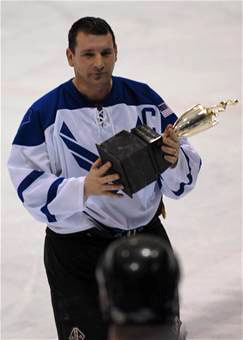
Rumble on the rink

Senior Master Sgt. Dan Morin holds the trophy for the Commander's Cup Hockey Game Jan. 13 at the Big Dipper Ice Arena in Fairbanks, Alaska. Eielson Icemen faced off against the Fort Wainwright Grizzlies in the 11th Annual Interior Alaska Armed Forces Ice Hockey Commander's Cup Game. Eielson Icemen went on to win the game 8 to 6. Sergeant Morin is assigned to the 354 Fighter Wing at Eielson Air Force Base, Alaska.